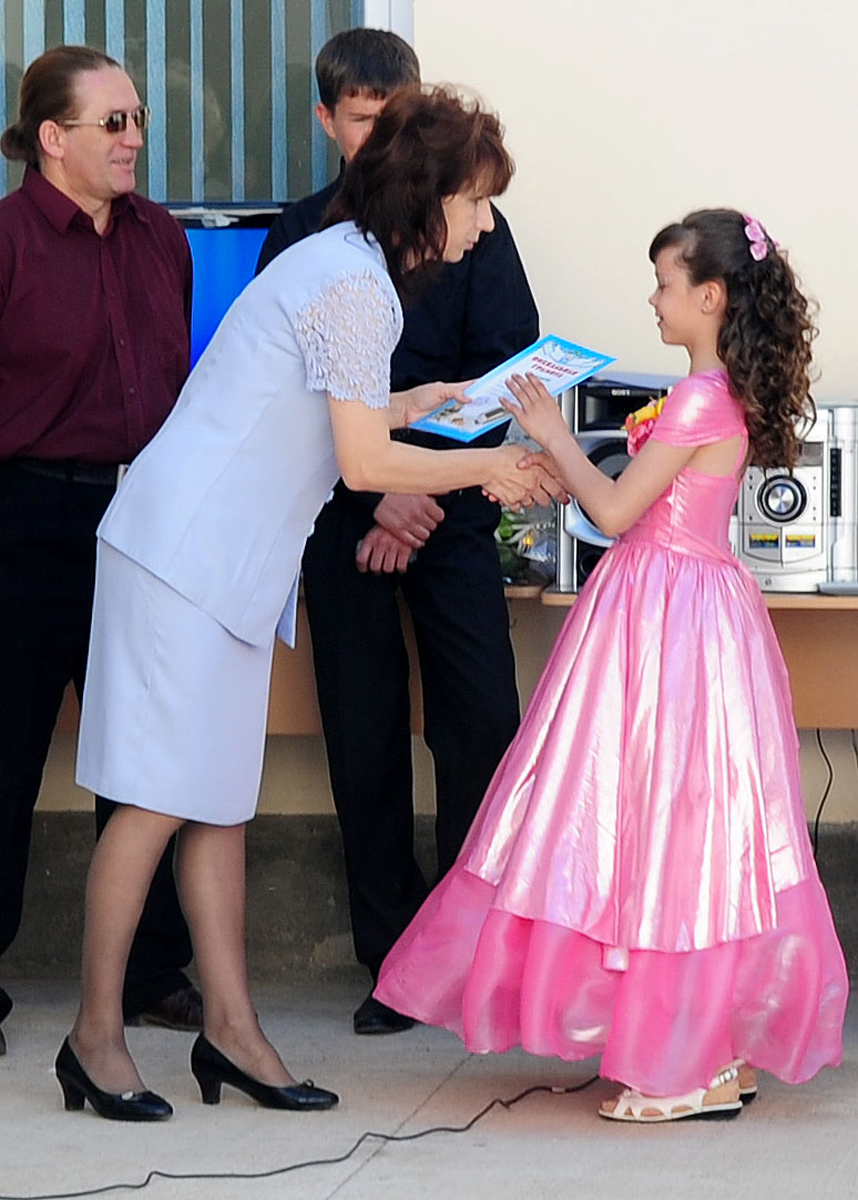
Birdik Village School culminates with ceremony, surprise

A child receives a certificate commemorating the completion of the school year May 25, 2010, at the Birdik Village School, Kyrgyzstan. Airmen from the Transit Center at Manas were invited to the graduation ceremony to help the children celebrate the end of the first school year since the completion of a recent reconstruction project. The project was funded by the Air Force and made possible by volunteer efforts from Airmen at the Transit Center at Manas, Kyrgyzstan.